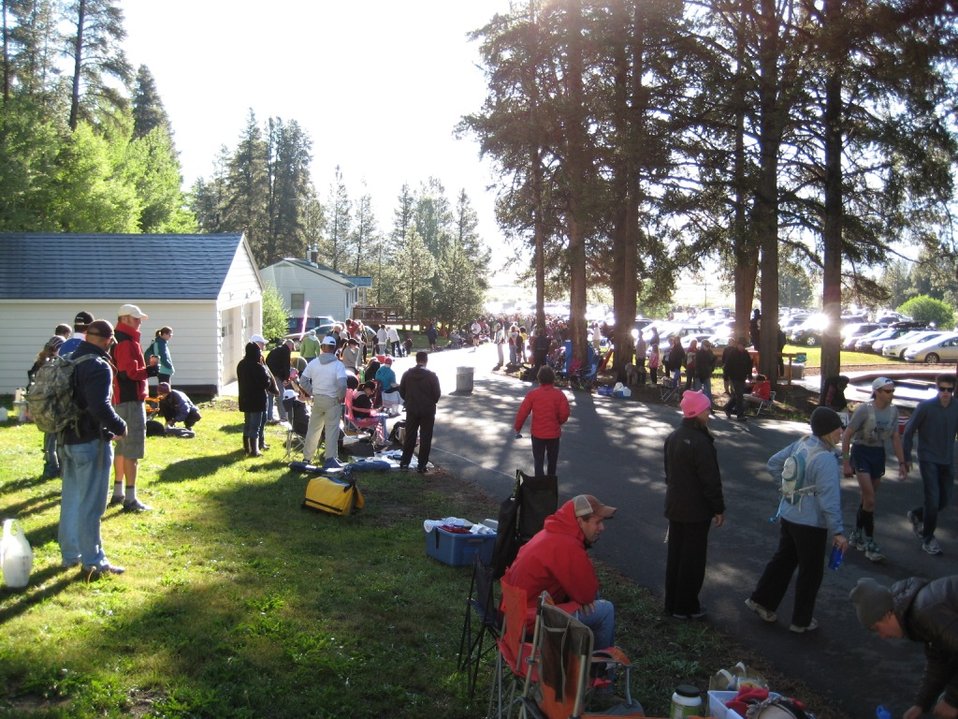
Looking south from volunteer house

Runners pass through Leadville National Fish Hatchery during the Leadville Trail 100 run in August.